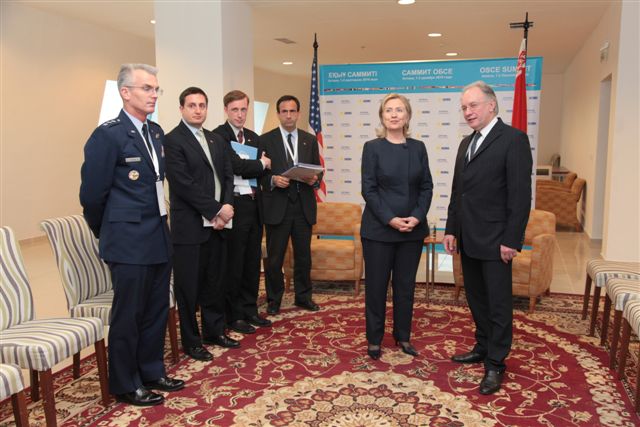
Secretary Clinton Holds a Bilateral Meeting With Belarussian Foreign Minister Martynov

U.S. Secretary of State Hillary Rodham Clinton holds a bilateral meeting with Belarussian Foreign Minister Sergey Martynov at the OSCE Summit in Astana, Kazakhstan, on December 1, 2010.